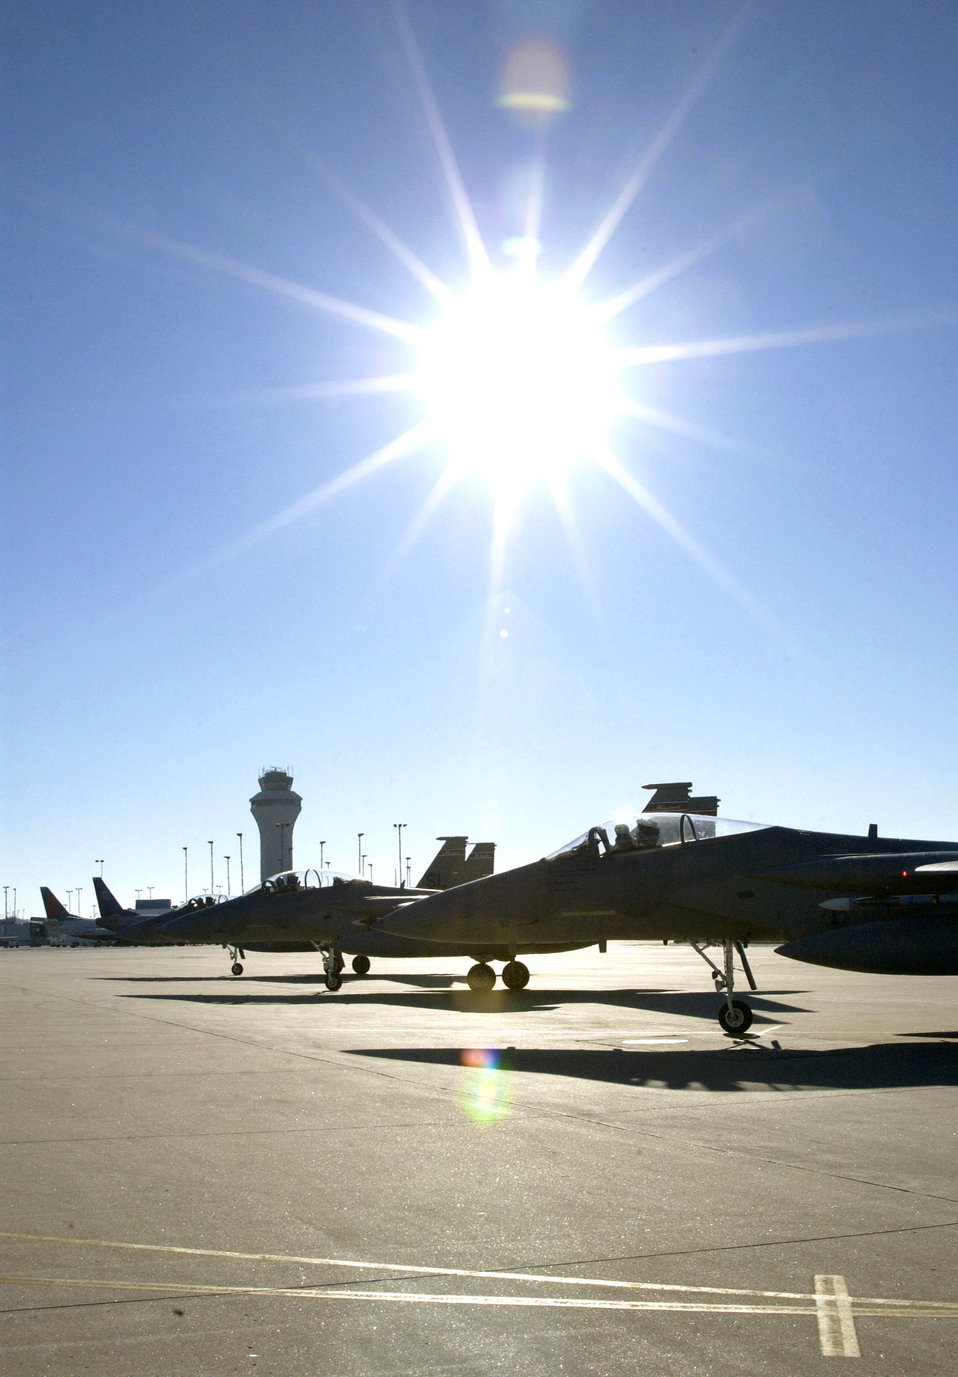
Chilly take-off

ST. LOUIS, Mo. -- On a chilly Dec. 14 morning, F-15 Eagles wait to depart from Lambert International Airport here. The F-15s are part of the 110th Fighter Squadron attached to the Missouri Air National Guard's 131st Fighter Wing.